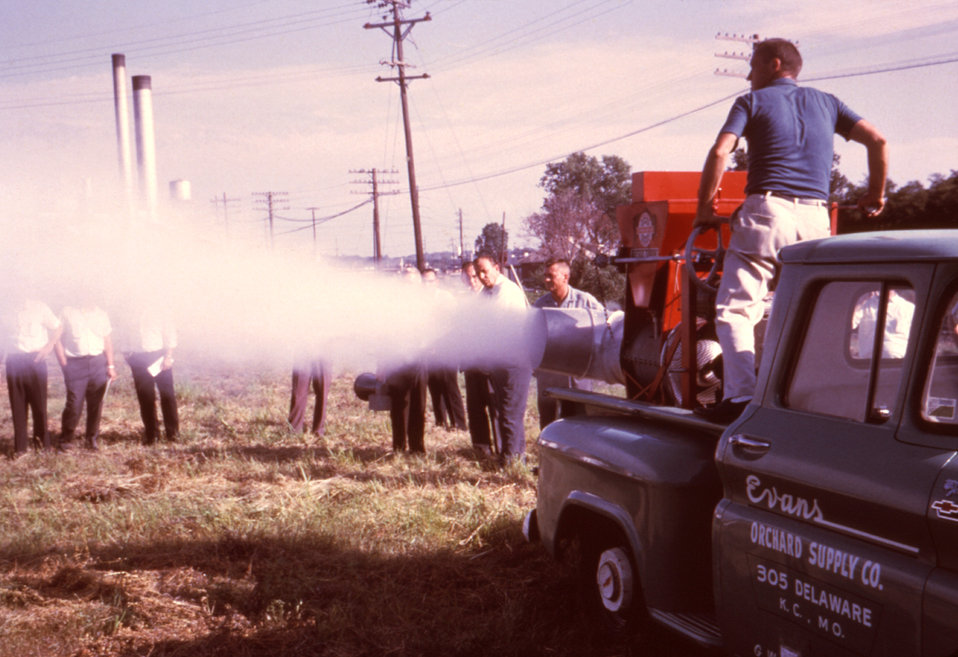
This 1981 photograph depicts field technicians examining a Buffalo Turbine Sprayer/Duster as it delivers a cloud of insecticide from its nozzle. It is used in the control of disease vectors, which as agricultural nuisances, must be kept in check so as not to damage crops, or become public health hazards.